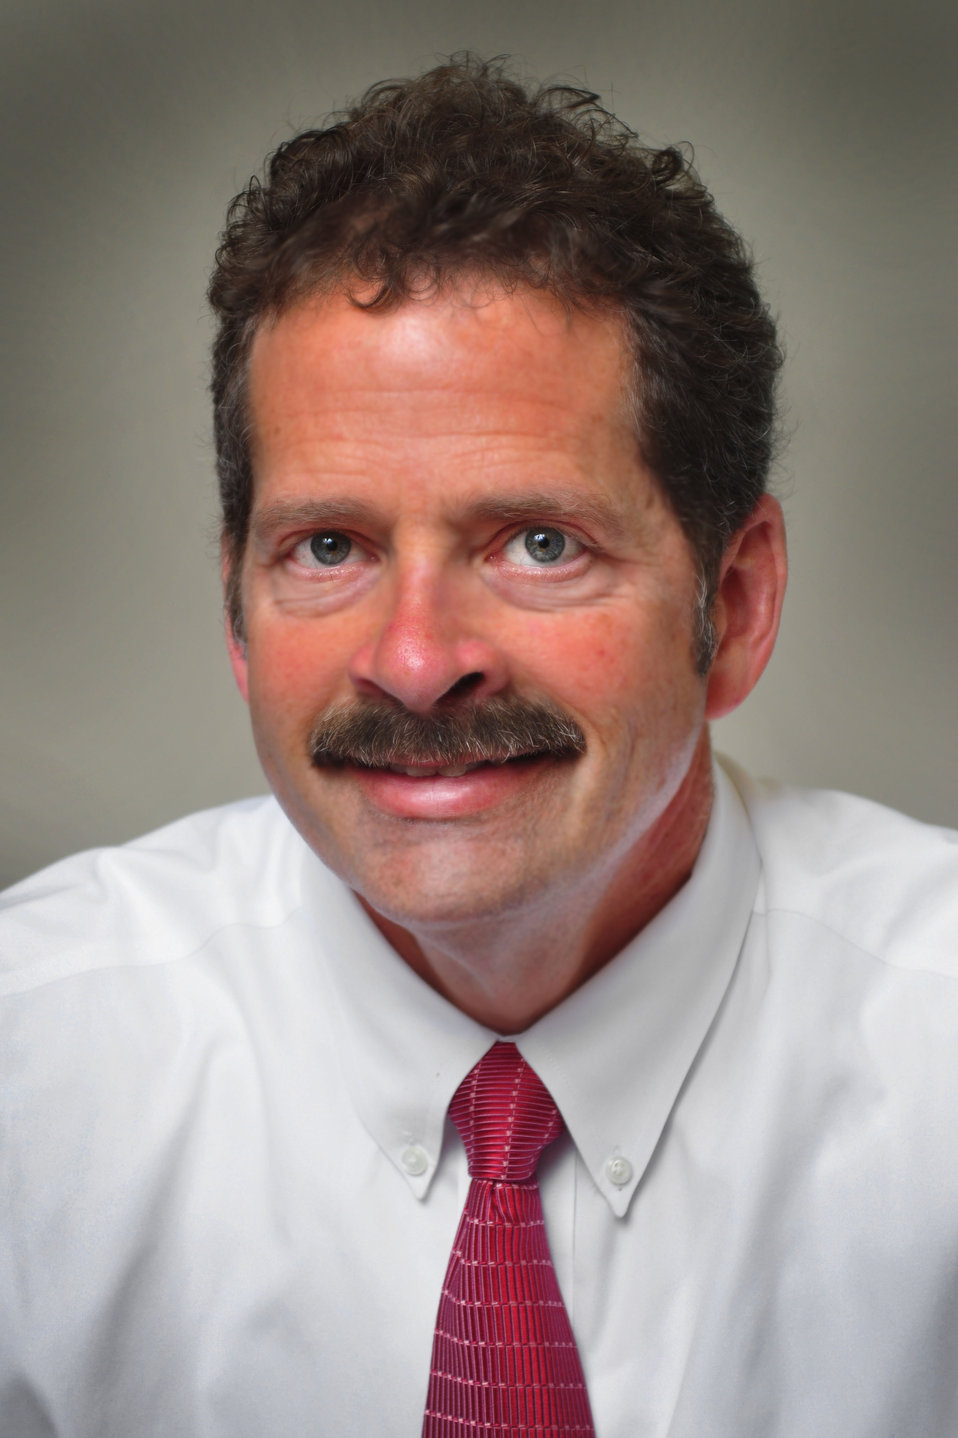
Kevin Hall Deputy Manager DOE Oak Ridge Office

042 DOE photo Lynn Freeny 4-26-2013 Oak Ridge Tennessee